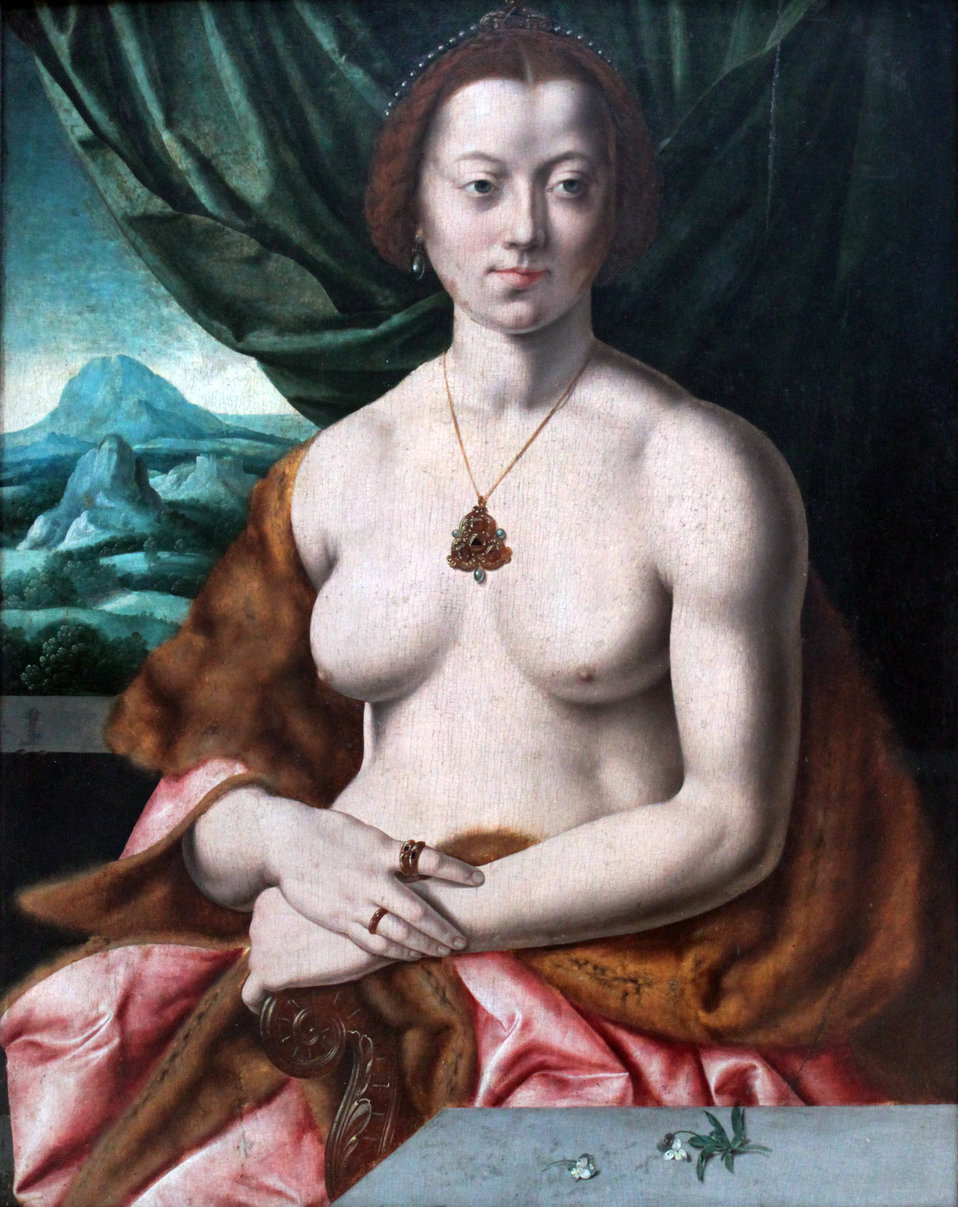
1535 Bruyn weibliches Aktbildnis anagoria